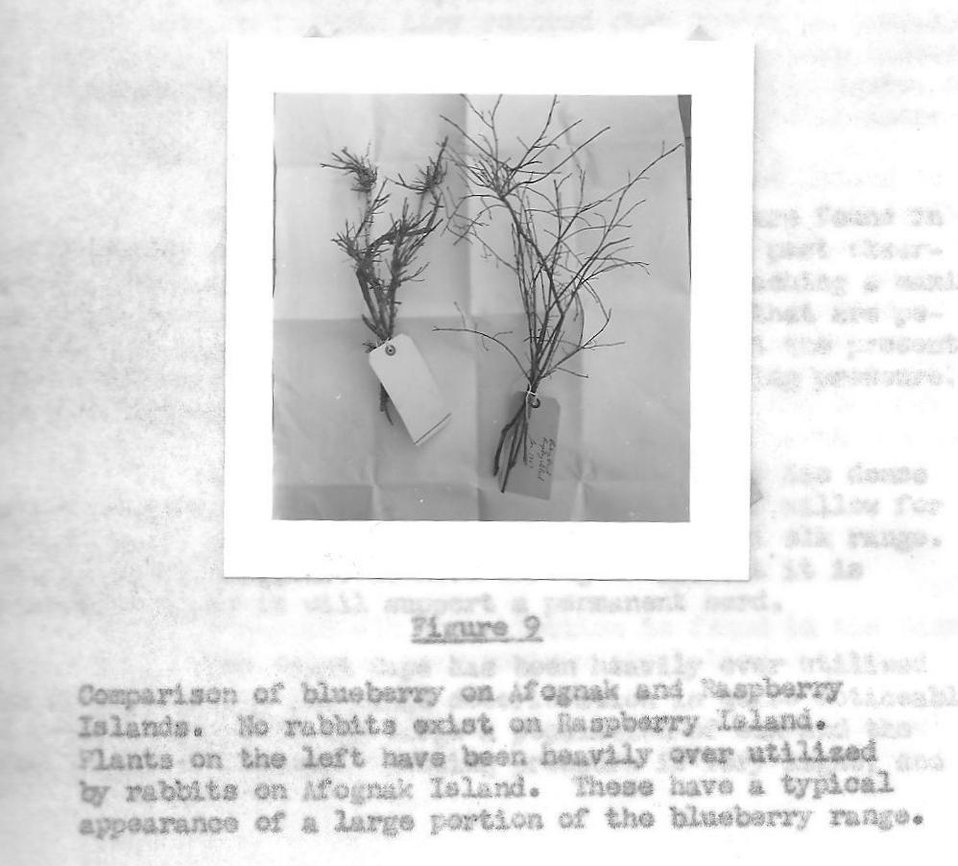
(1957) Blueberry Comparison

Credit: USFWS

Source and Contact: Kodiak National Wildlife Refuge